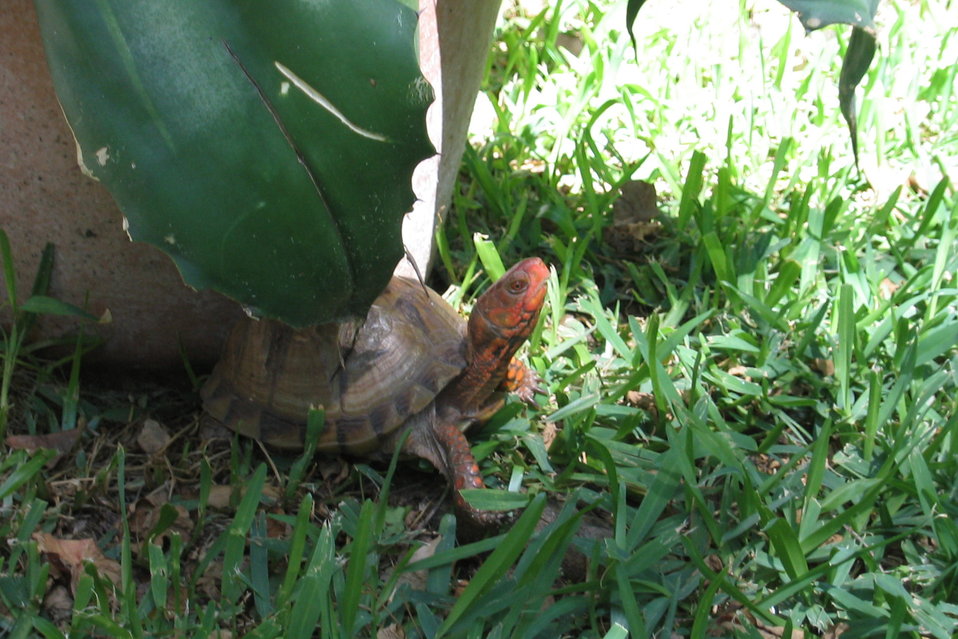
Uploaded by request of Sharon Highfield

Taken in my backyard

This is just one of my Turtles I have 3 and they run wild in our back yard we a created a very green place for them, with herbs and all other types of flowers. We have also had several baby turtles that we have set free in the state parks.